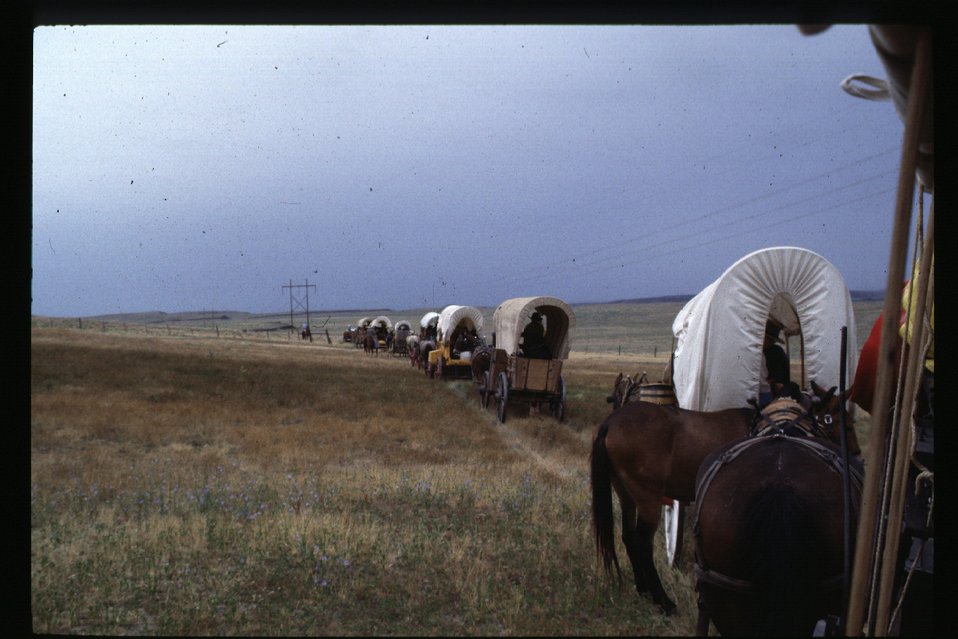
Wagon Train Oregon Trail Reenactment Four Rivers Field Office LSRD Lower Snake River District